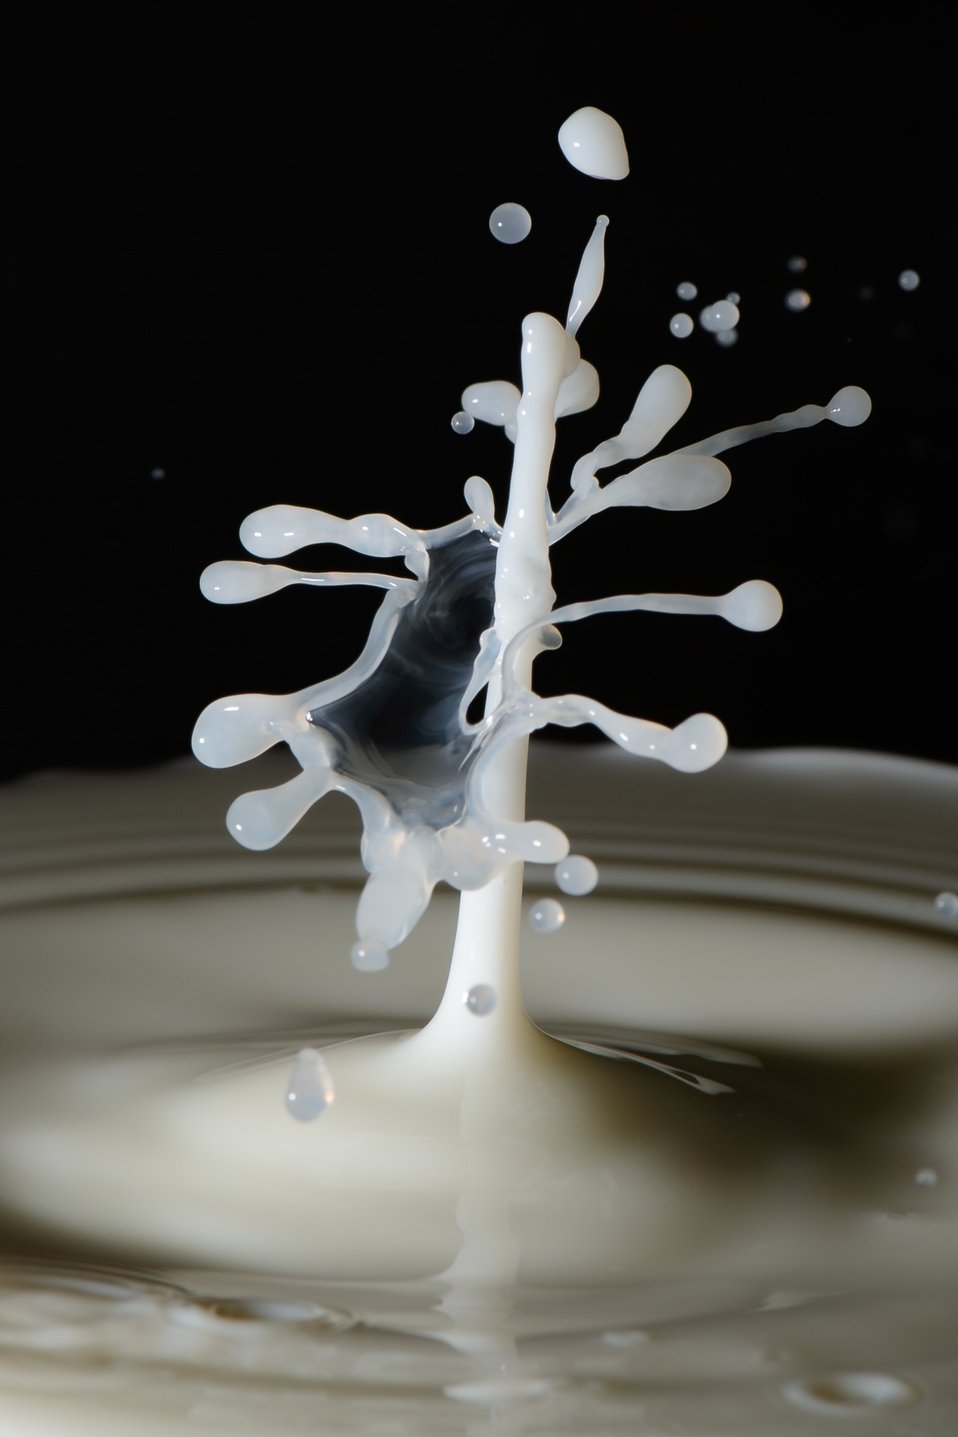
Chaos

The impact of drops of milk.